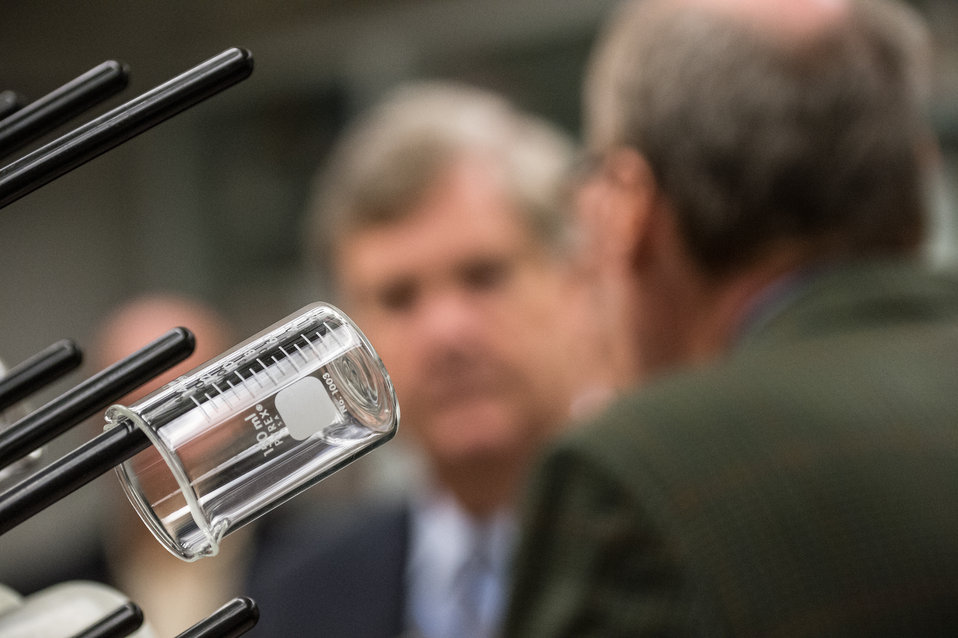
U.S. Department of Agriculture (USDA) Secretary Tom Vilsack listens to Agriculture Research Service (ARS), National Center for Genetic Resources Preservation (NCGRP), National Animal Germplasm Program (NAGP), Program Leader Dr. Harvey Blackburn talks about the original need and history of the NAGS embryo and sperm freezing and reconstitution technology; the productive cooperation and collaboration with industry, other agencies and international partners; and how the data from their work becomes part of (animal genetic resource information network (AnimalGRIN) an ever-growing source of information, during his visit in Ft. Collins, CO, on Wednesday, Nov. 6, 2013.